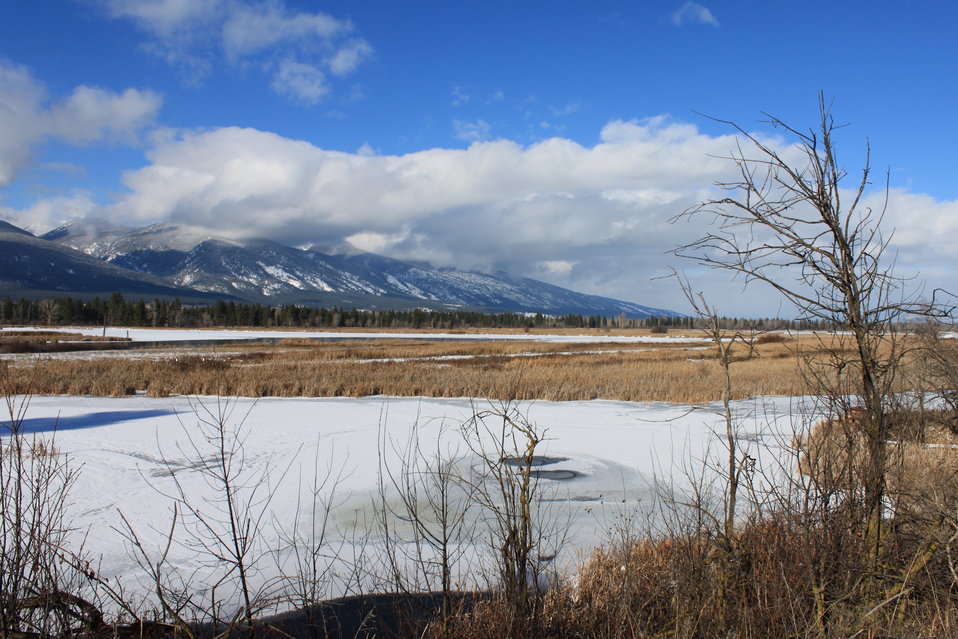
Frozen Wetlands

Winter has taken hold in western Montana at Lee Metcalf National Wildlife Refuge. (2011)